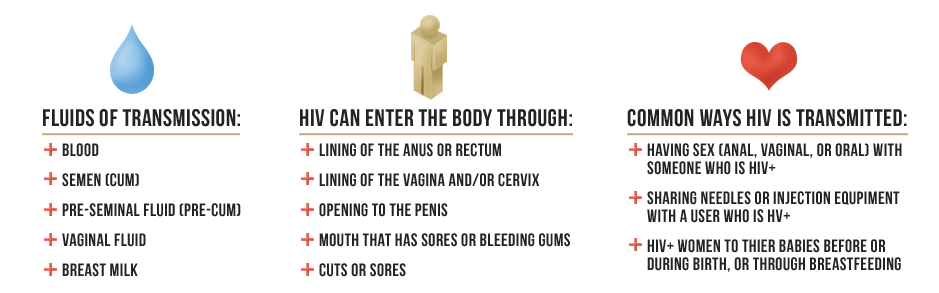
fluids of transmission